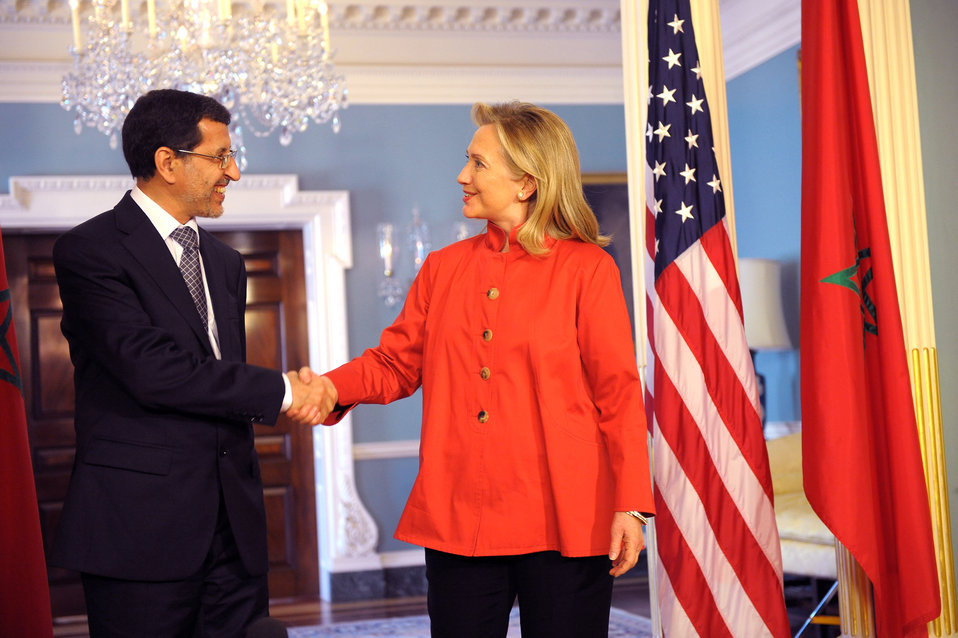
Secretary Clinton Meets With Foreign Minister Al-Othmani of Morocco

U.S. Secretary of State Hillary Rodham Clinton meets with Foreign Minister Saad-Eddine Al-Othmani of Morocco at the Department of State in Washington, D.C. on March 15, 2012.